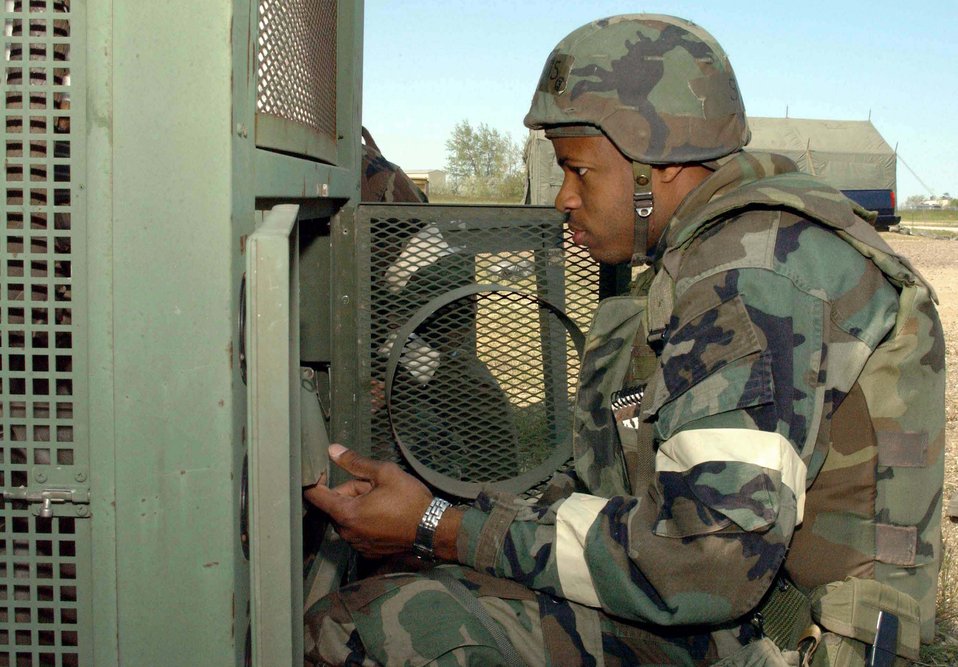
Wartime readiness

MINOT AIR FORCE BASE, N.D. -- Senior Airman Oba Lewis tries to start a refrigeration unit during an attack exercise here June 28. The exercise simulated a bare-base environment to test the wartime skills of Airmen. Airman Lewis is assigned to the 5th Civil Engineer Squadron.